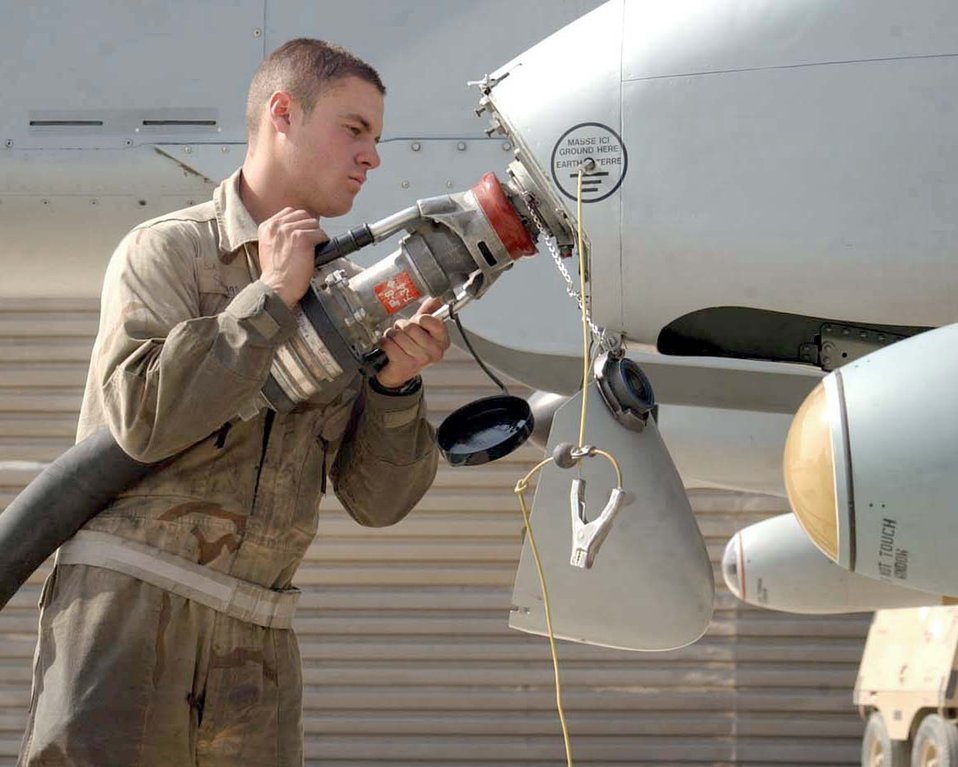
A-10

BAGRAM AIR BASE, Afghanistan (AFPN) -- Senior Airman Jeff Skaggs connects a nozzle to the fueling receptacle of an A-10 Thunderbolt II. Airman Skaggs is an A-10 crew chief with the 354th Expeditionary Fighter Squadron here and is deployed from Davis-Monthan Air Force Base, Ariz.